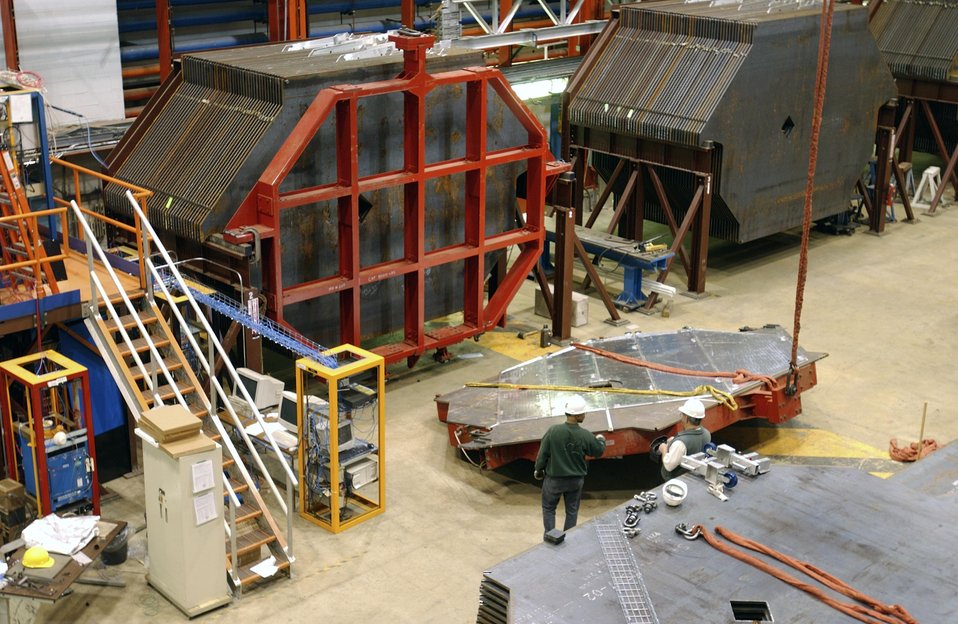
THE FIRST MINOS DETECTOR PLANE BEING MOVED FROM THE NEW MUON LAB TO THE MINOS BUILDING.

TO CARRY OUT THE MINOS EXPERIMENT SCIENTISTS USE THE MAIN INJECTOR ACCELERATOR AT THE FERMI NATIONAL ACCELERATOR LABORATORY IN BATAVIA, ILLINOIS TO SEND A BEAM OF MUON NEUTRINOS THROUGH THE EARTH TO A CAVERN HALF A MILE UNDERGROUND IN A FORMER IRON MINE IN NORTHEASTERN MINNESOTA. PHYSICISTS WILL USE THE MINOS DETECTOR TO EXPLORE THE PHENOMENON OF NEUTRON MASS, A MILESTONE IN THE FIELD OF NEUTRINO PHYSICS.